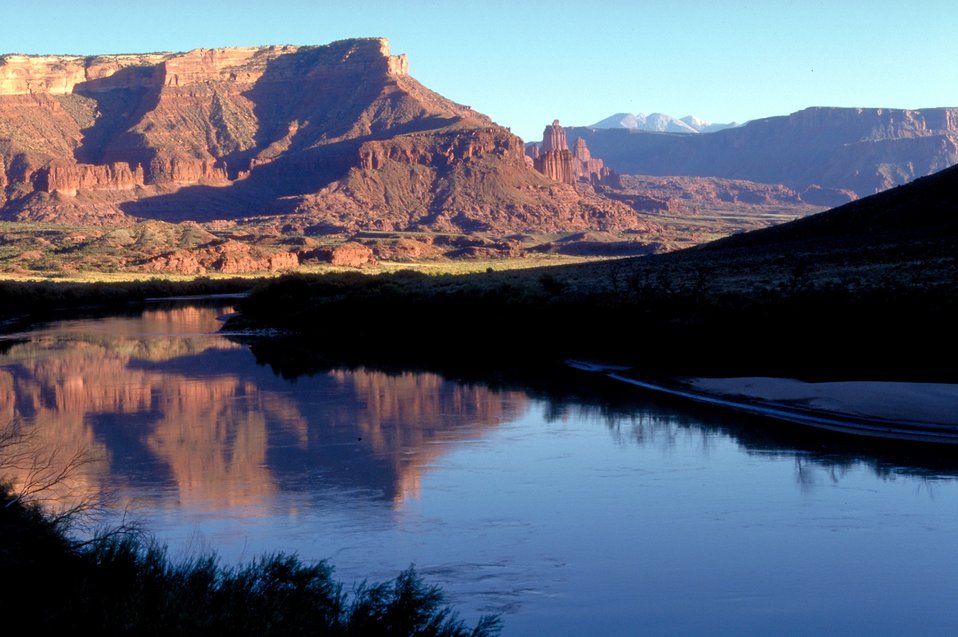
Fisher Towers along Highway 128, near Moab, Utah.